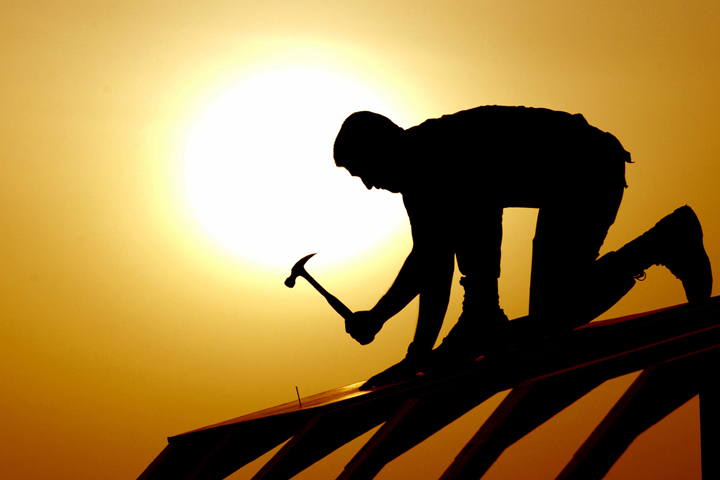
Building past sundown

OPERATION IRAQI FREEDOM -- Staff Sgt. George Greene, assigned to the 379 Expeditionary Civil Engineering Squadron structures shop, constructs a storage facility at this forward deployed location in the Gulf region in support of OPERATION IRAQI FREEDOM.